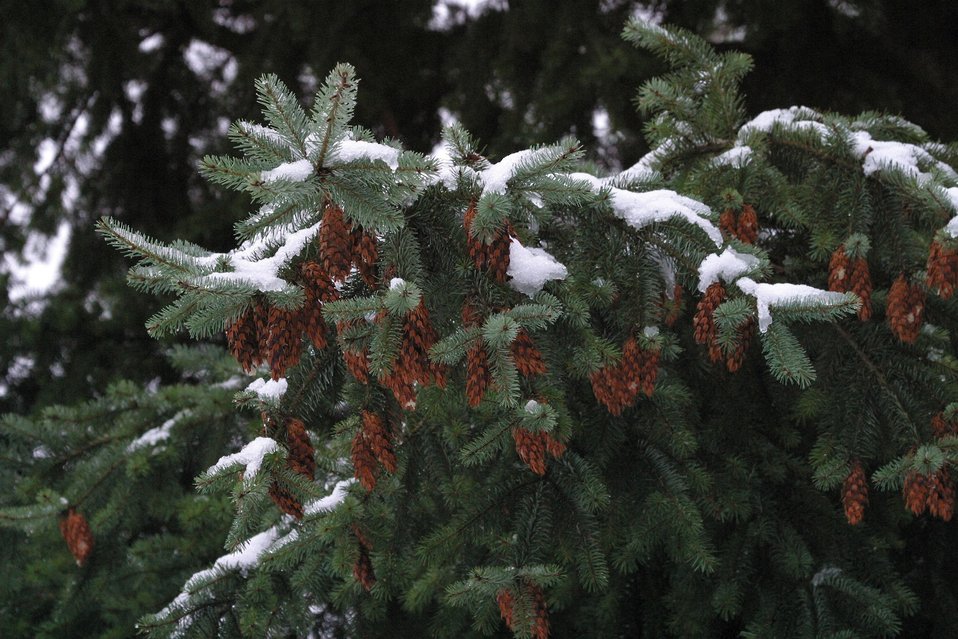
Snow and ice on Douglas Fir Bows and cones during the storm of January 2004.